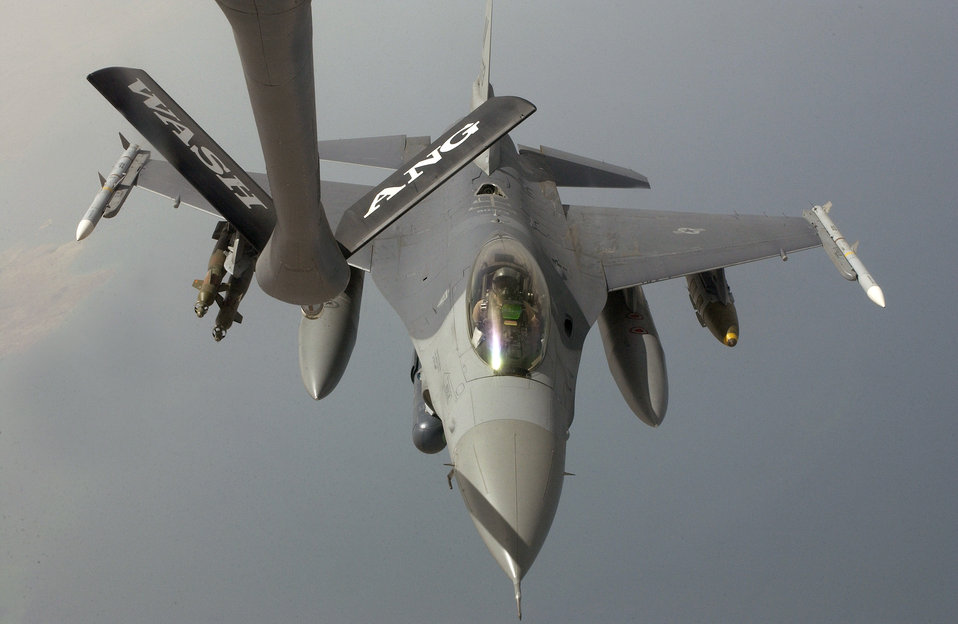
One billion pounds of fuel

SOUTHWEST ASIA -- An F-16 Fighting Falcon from the 555th Fighter Squadron at Aviano Air Base, Italy, approaches a KC-135 Stratotanker from the 340th Expeditionary Air Refueling Squadron on April 21. The F-16 received the 1 billionth pound of fuel from Combined Forces Air Component Command refuelers since Jan. 30, 2003.